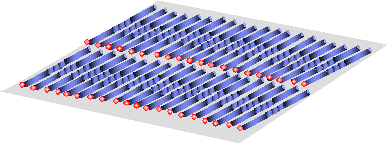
Gold Nano Anchors Put Nanowires in Their Place

Illustration shows how crystalline zinc oxide nanowires (blue) push 'seeds' of gold nanoparticles (red) forward as they grow.